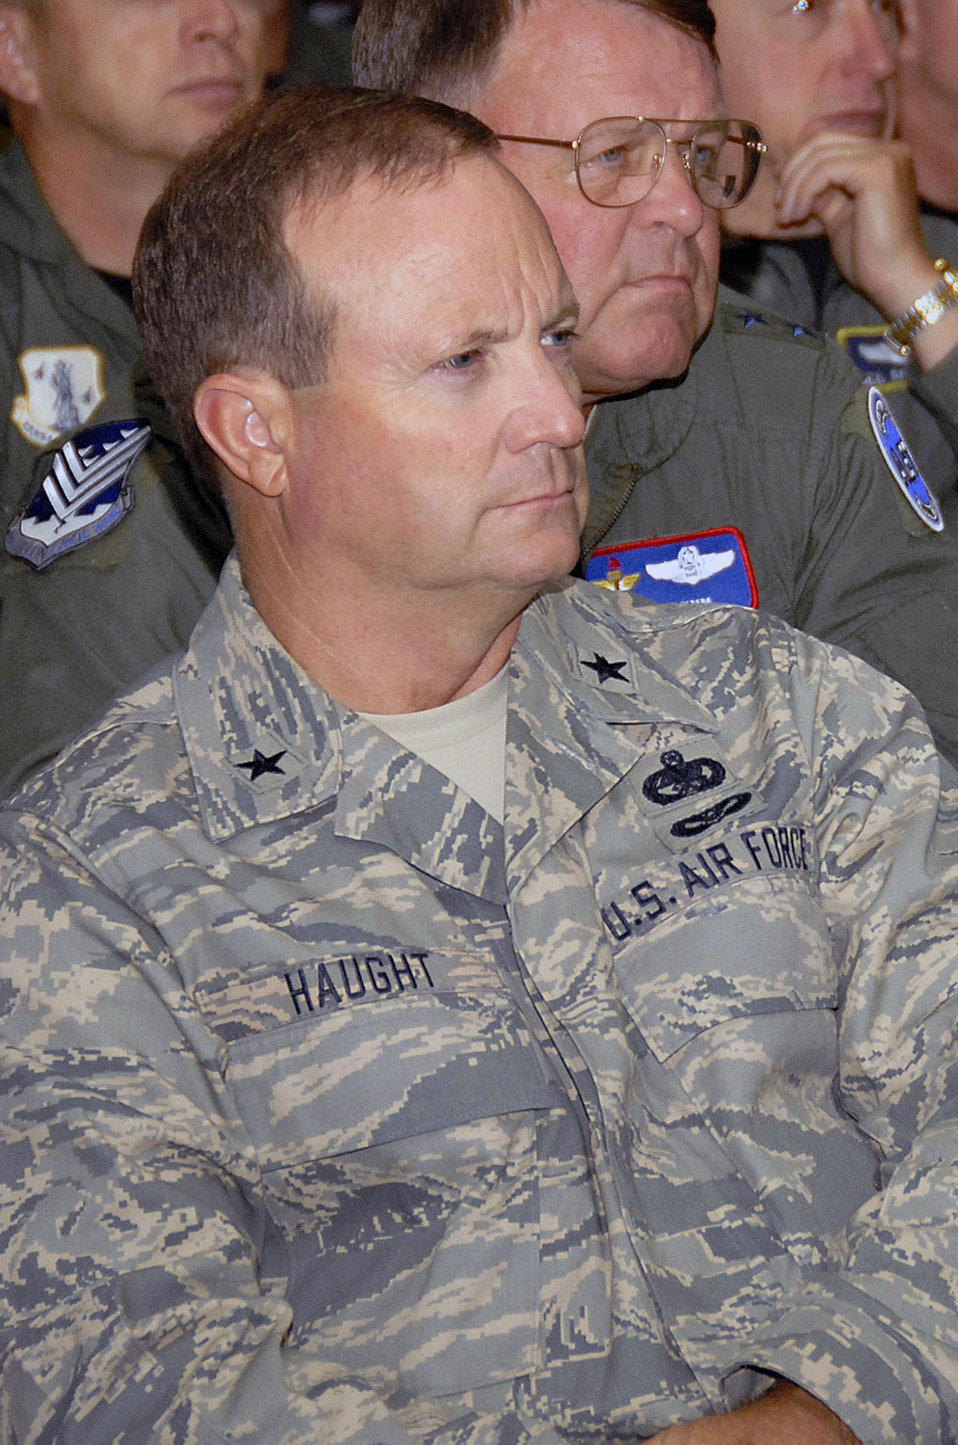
Air Guard leadership summit

Brig. Gen. Donald Haught, vice chair for the Air National Guard steering committee and assistant to the director of the Air National Guard, listens to a presentation Aug. 12 during the Air Guard's 2008 Leadership Summit in Wisconsin. More than 500 Air Guard senior leaders and safety experts met at the Volk Field Combat Readiness Training Center Aug. 11-15 for the summit, which carried a theme of